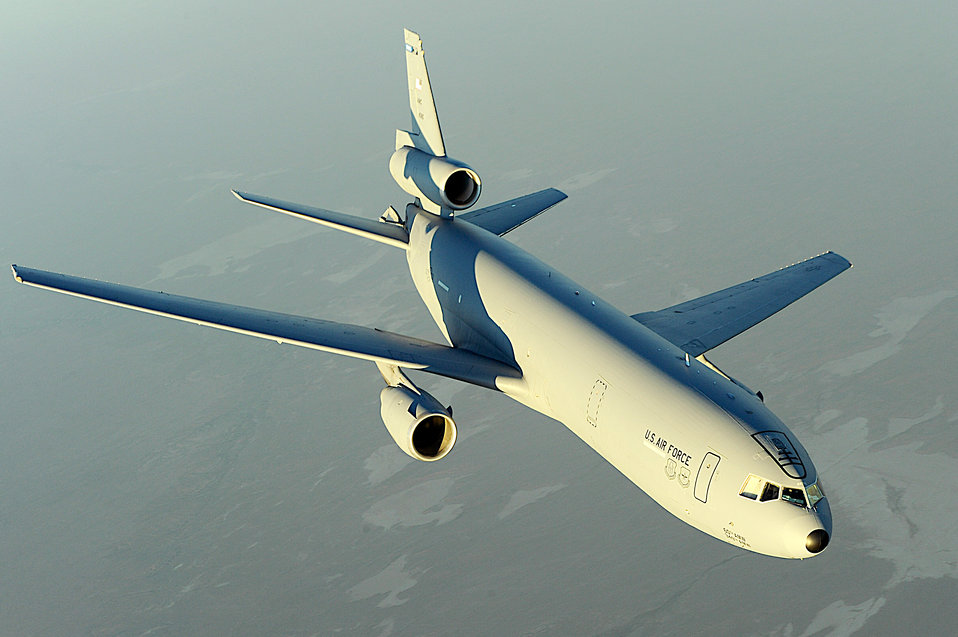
Airpower summary: KC-10s sustain fighters

A KC-10 Extender supports air refueling missions over Afghanistan. On March 20, Air Force and coalition tankers flew 44 sorties and off-loaded approximately 2.9 million pounds of fuel to 239 receiving aircraft.